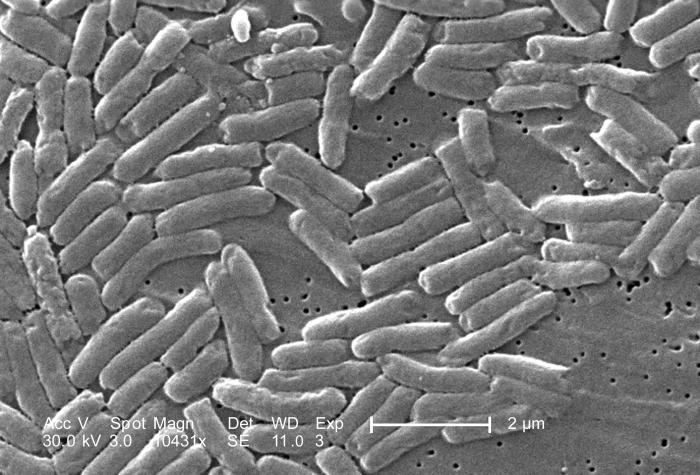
Under a high magnification of 10431X, half that of PHIL 10566, this scanning electron micrograph (SEM) revealed a colony of Gram-negative bacilli, or rod-shaped Salmonella sp. bacteria. The genus Salmonella is a member of the taxonomic family, Enterobacteriaceae, and approximately 2000 serotypes of this genis are known to cause disease in human beings. See PHIL 10945 for a colorized version of this image.How can Salmonella infections be diagnosed?